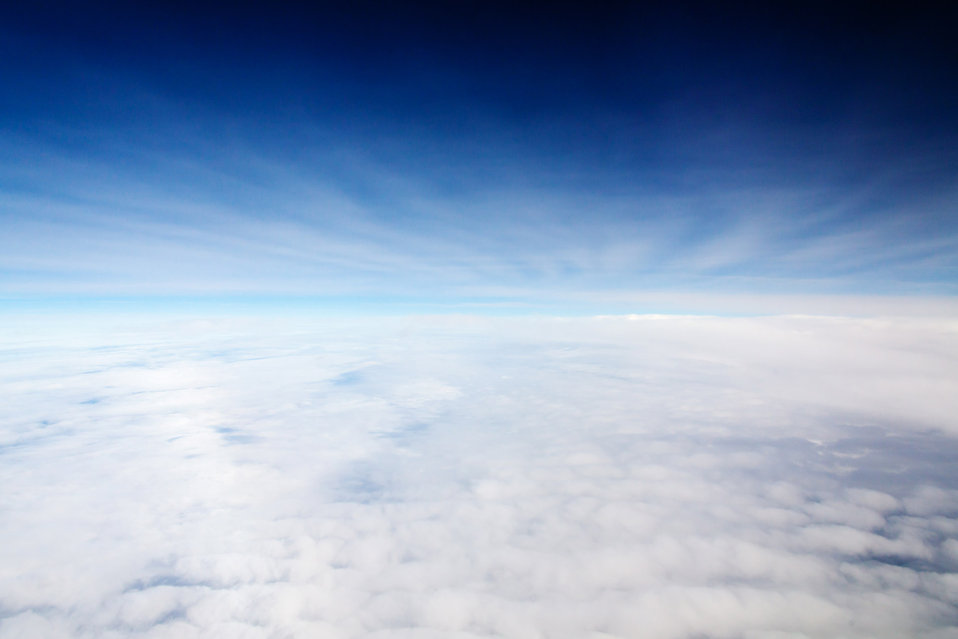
Between clouds

Between cloud layers.